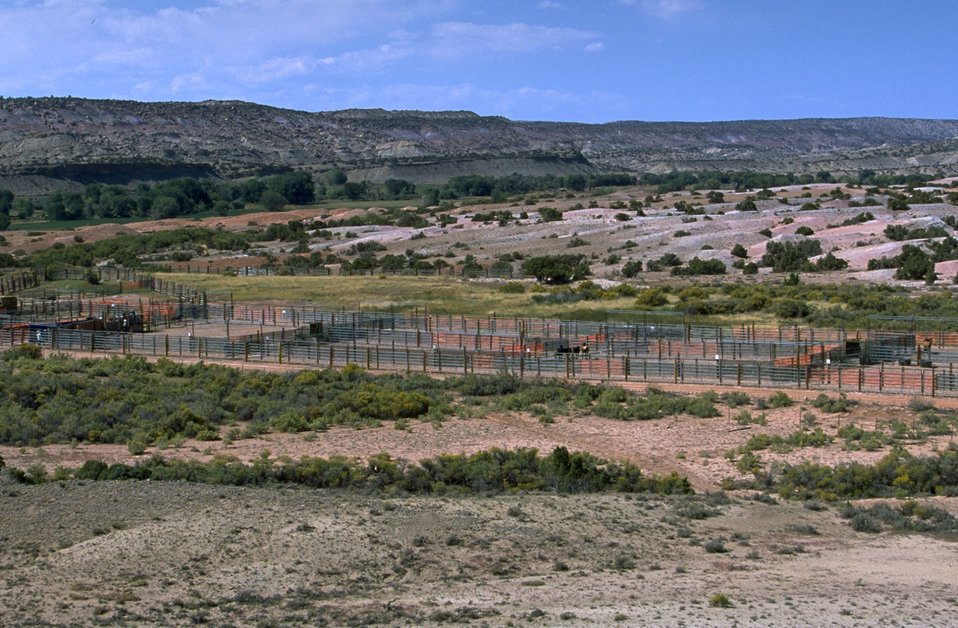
Britton Spring wild horse holding area in the Pryor Mountain National Wild Horse Range